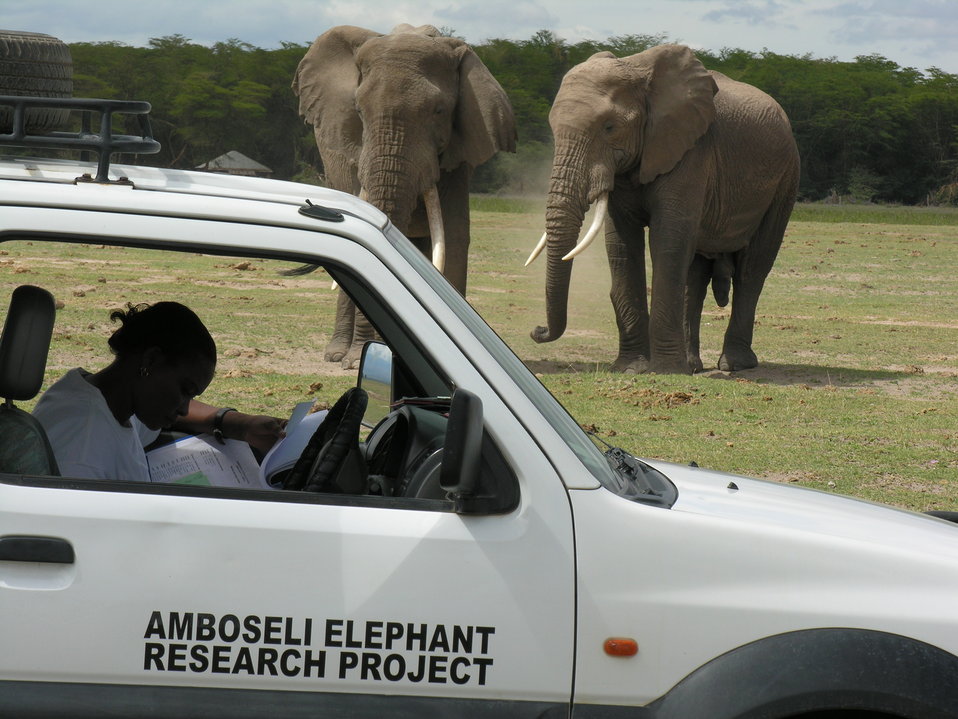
Elephant Study 2

Amboseli Elephant Research Project has studied elephants for forty years and made key discoveries about elephant intelligence and social relationships.